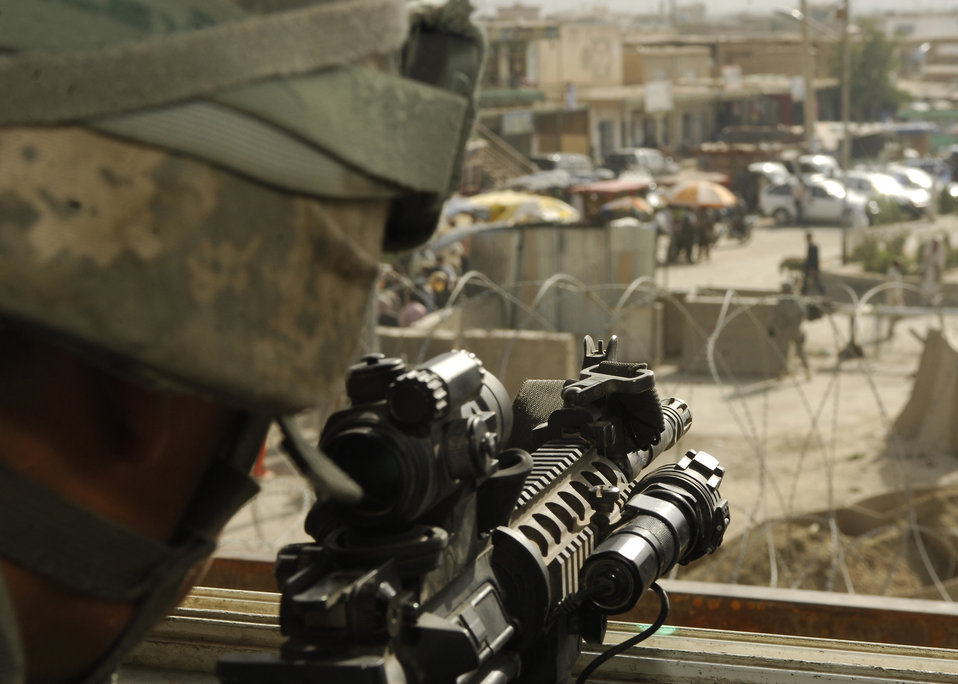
Patrolling the entry

From his overwatch tower, Staff Sgt. Steven Lugo-Velez can see much of the town surrounding Bagram Airfield, Afghanistan. Sergeant Lugo-Velez is in the 455th Expeditionary Security Forces Squadron and is currently deployed from Edwards Air Force Base, Calif.